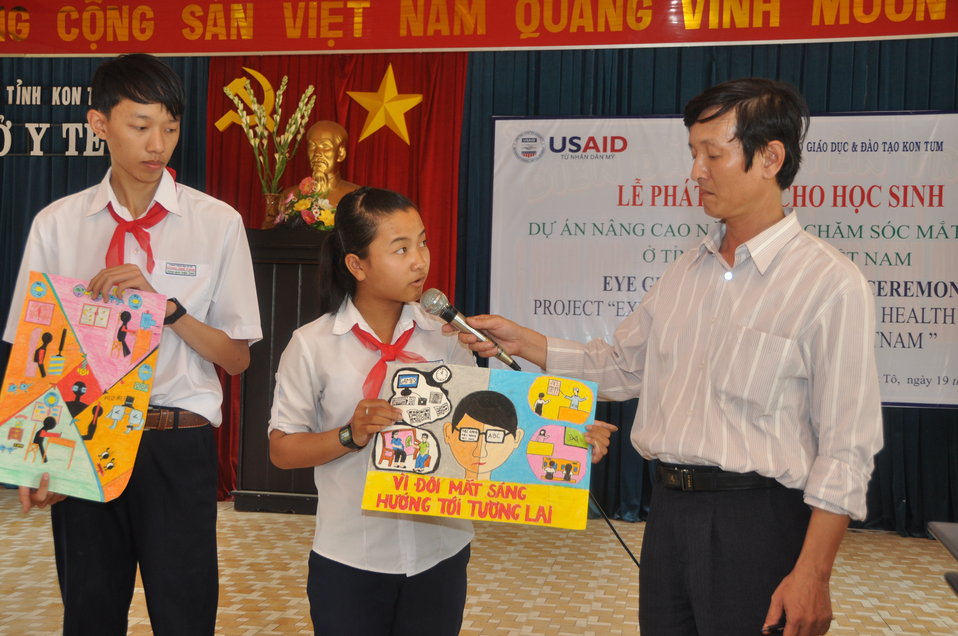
Students in Kon Tum create artwork about the importance of eye care